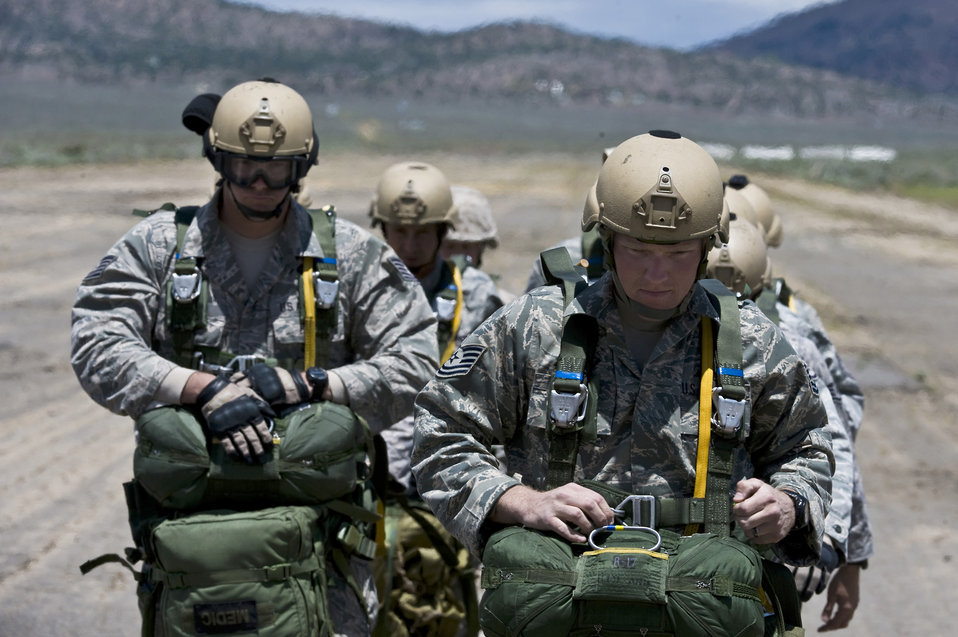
Airdrop and sling-load training

Members of the 820th RED HORSE Squadron participate in airdrop and sling-load training June 28, 2011, at the Senator Harry Reid Readiness and Training Center near Stead, Nev.